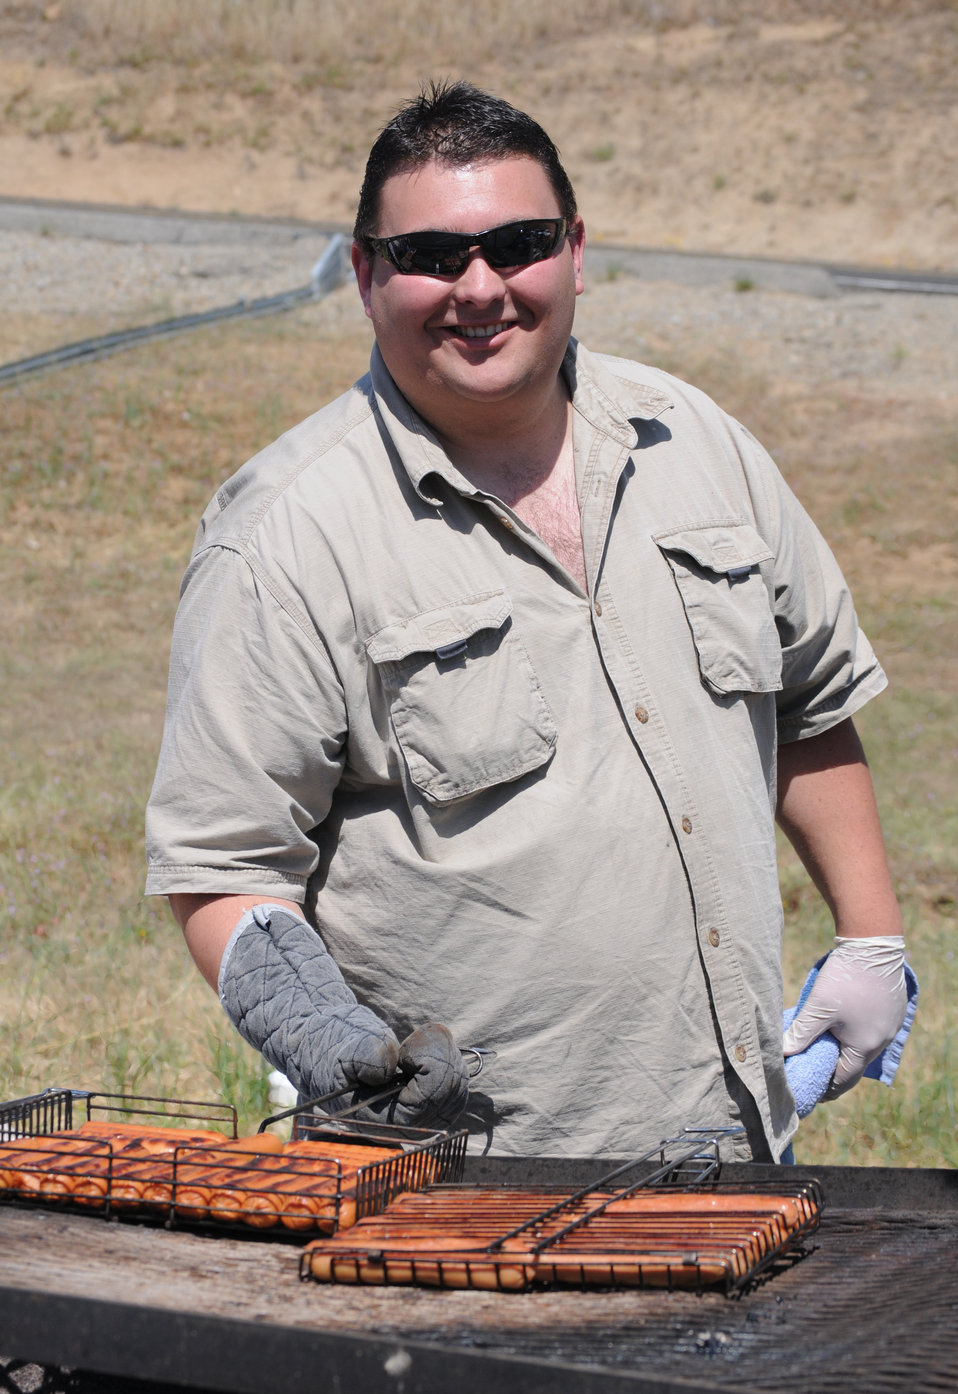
Kids Fishing Day at Hensley Lake

HENSLEY LAKE, Calif. (April 30, 2011) – Volunteer James Anderson grills a free lunch donated by the Mid Valley Bass Club for 15th annual Kids Fishing Day participants here April 30. The Sacramento District’s Hensley and Eastman lakes take turns hosting the event, which provides free loaner gear and clinics on fishing techniques and water safety to help connect kids with the outdoors.